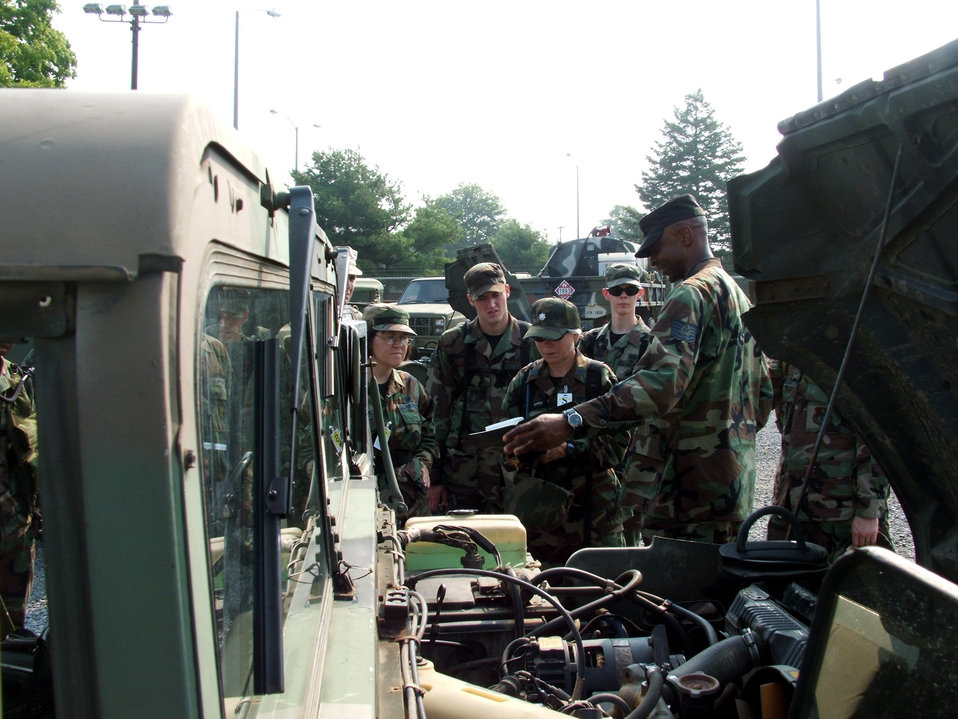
'Deployed' to New Jersey

FORT DIX, N.J. -- Tech. Sgt. Sheldon Steele shows Airmen how to maintain and operate a Humvee during contingency skills training here. The training was part of a larger effort to train Airmen to deploy for the global war on terrorism. Sergeant Steele is an instructor with the 421st Combat Training Squadron